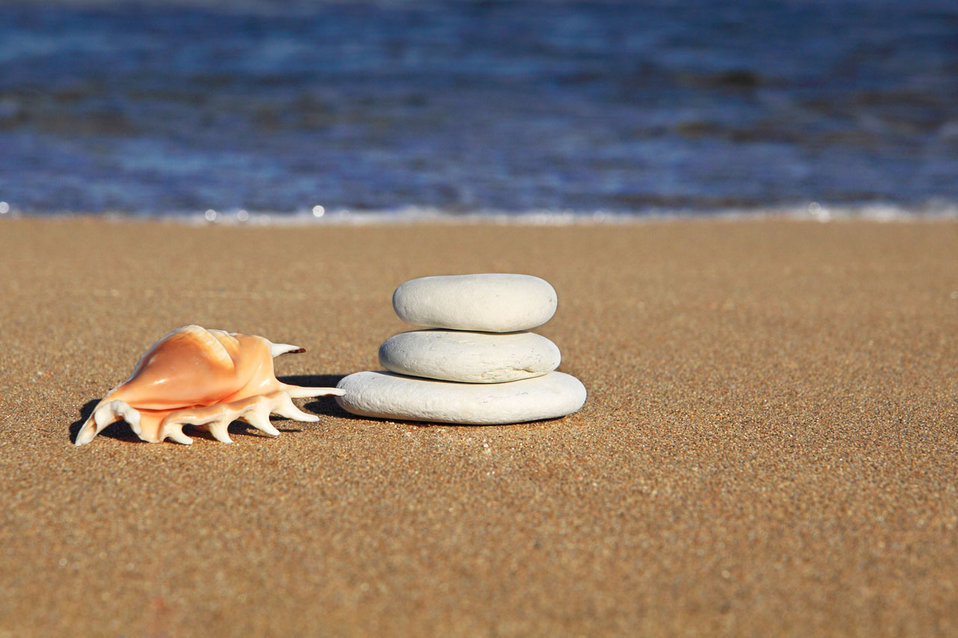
Stones and shell and beach

Pebbles and shell in sand with ocean in background.